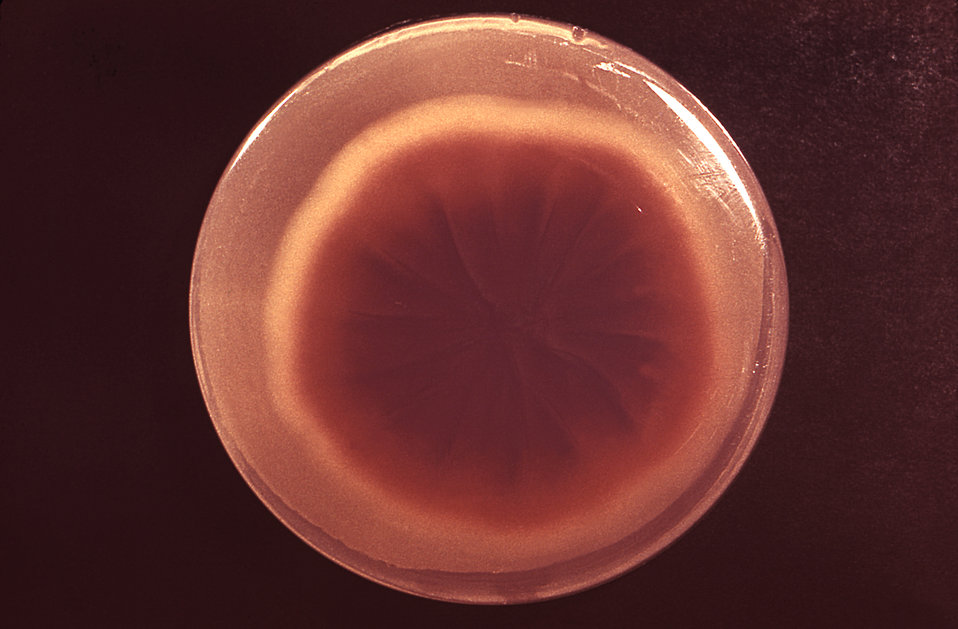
Viewed from the reverse, or rear side, this Petri dish culture containing Sabouraud dextrose agar, had grown a single, large colony of the dermatophytic fungus, Trychophyton megninii. As seen here in this example, from the rear, colonies of this anthropophilic specie display a pale, yellowish, brown, or reddish-brown coloration, while from the front, they display a waxy to cottony appearance, and a coloration ranging from a white to bright yellowish-beige or red violet. For a frontal view of this T. megninii colony, see PHIL 14961.